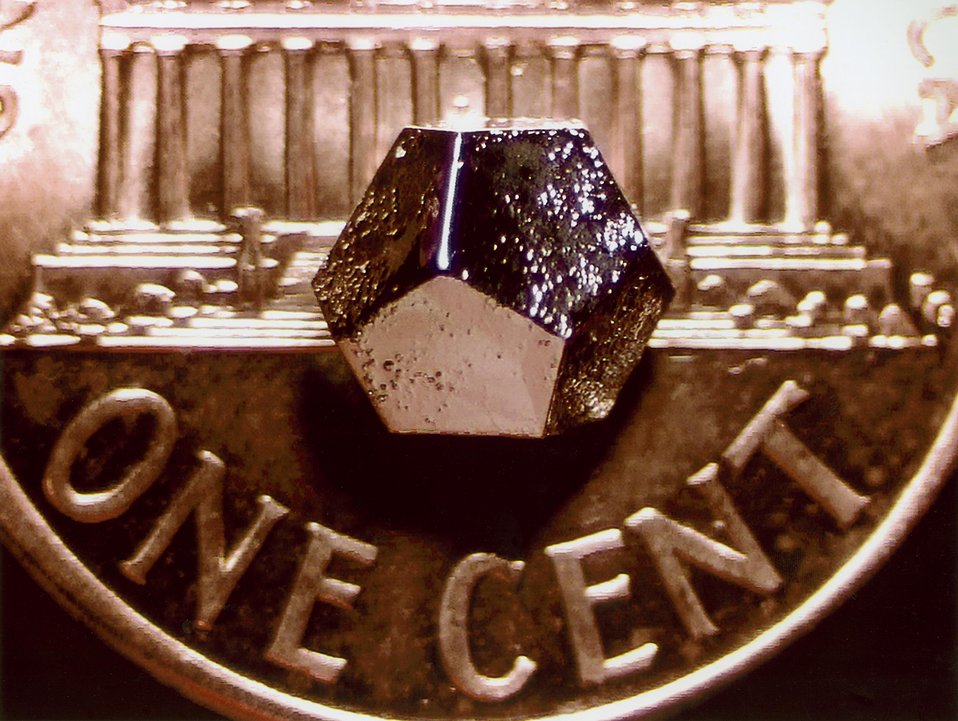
A SINGLE GRAIN QUASICRYSTAL AGAINST A PENNY, SHOWING THE CHARACTERISTIC PENTAGONAL FACETS.
A TEAM OF AMES SCIENTISTS RECEIVED DOE'S 1998 MATERIALS SCIENCES AWARD FOR 'OUTSTANDING ACCOMPLISHMENT IN MATERIALS CHEMISTRY' FOR ITS WORK WITH QUASICRYSTALS, MATERIALS WITH POTENTIAL AS HIGHLY EFFECTIVE COATINGS FOR AUTOMOTIVE AND MECHANICAL PARTS AND FRYING PANS. QUASICRYSTAL MATERIALS ARE HIGHLY RESISTANT TO WEAR AND CORROSION AND HAVE LOW COEFFICIENTS OF FRICTION, HIGHLY DESIRABLE PROPERTIES FOR COATINGS ON MECHANICAL AUTOMOTIVE PARTS.